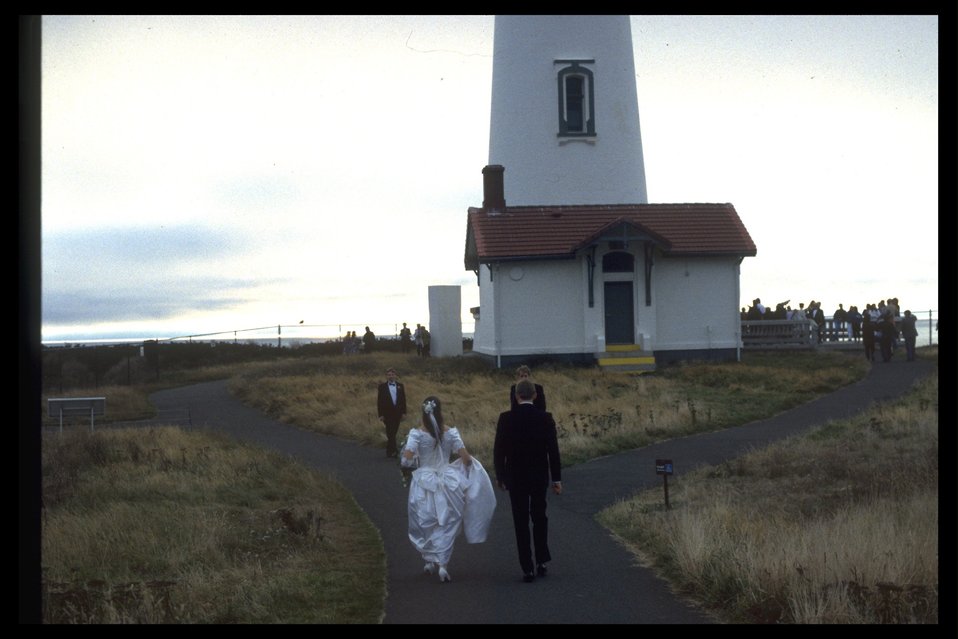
Wedding at the Yaquina Head Lighthouse.